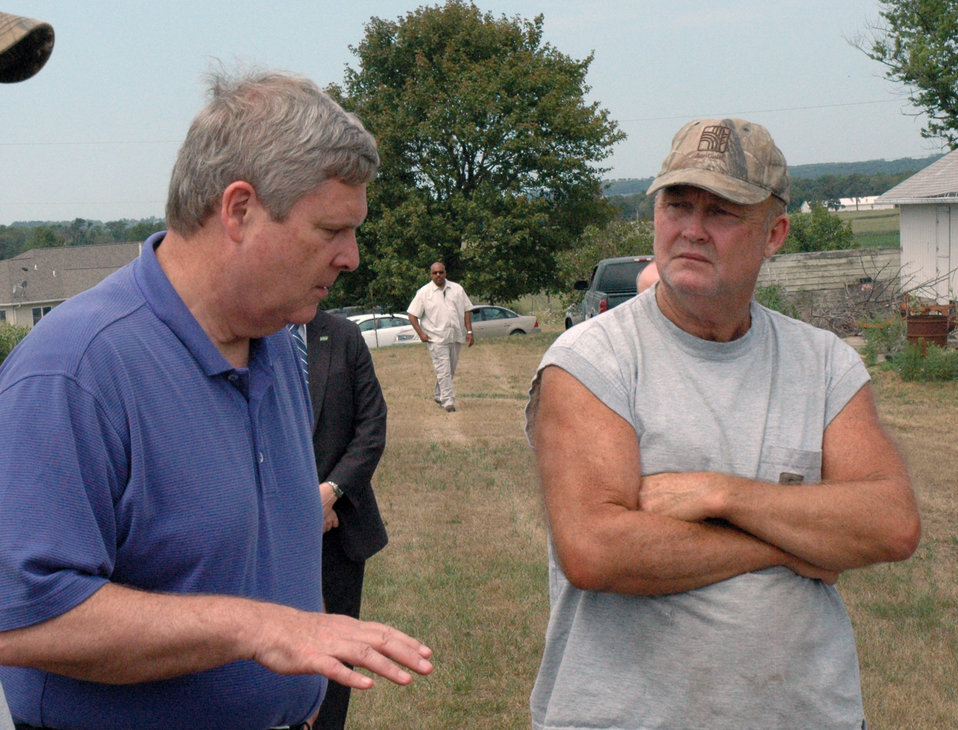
Agriculture Secretary Tom Vilsack tours Eric Cress' farm to examine crop damage caused by the drought near Center Point, IA on Monday, July 23, 2012. Eric and his father Dale said their farm in eastern Iowa is running around seven inches behind normal rain levels for this time in July. On July 20, 2012, the U.S. Drought Monitor reported that 88 percent of the nation’s corn and 87 percent of the soybeans are in drought-stricken areas.